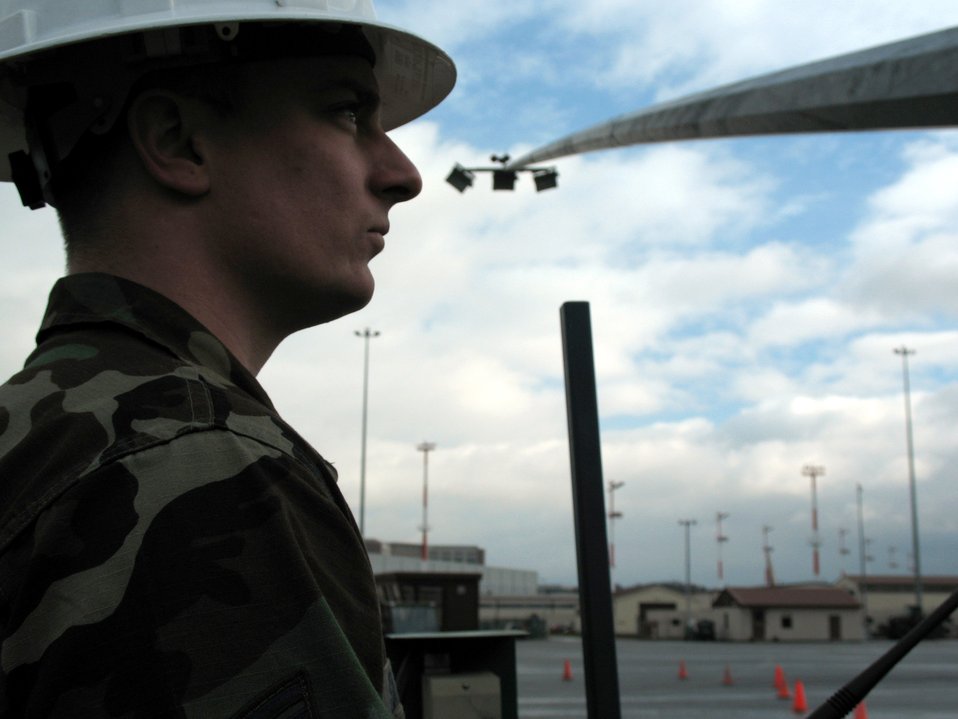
Mission failure means 'lights out' for engineers

Staff Sgt. Brian Sawyer, an electrical systems craftsman at Ramstein Air Base, Germany, observes as an 80-foot light pole on the flightline is lowered Feb. 13 to permit his civil engineer team to check the bulbs that have ceased working.